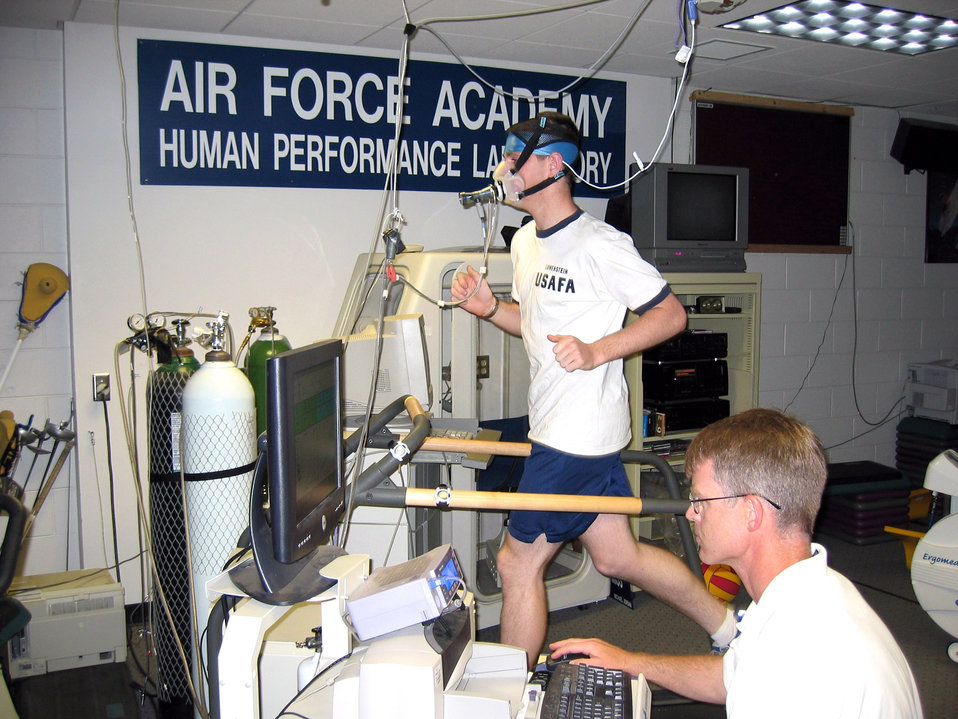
From playing fields to battlefields

Cadet 4th Class Ryan Lowenstein has his endurance and lung capacity analyzed at the Air Force Academy Human Performance Lab on Tuesday, May 23, 2006. The lab is refining techniques to help today's warfighter adapt to high-altitude locations like those found in Afghanistan.